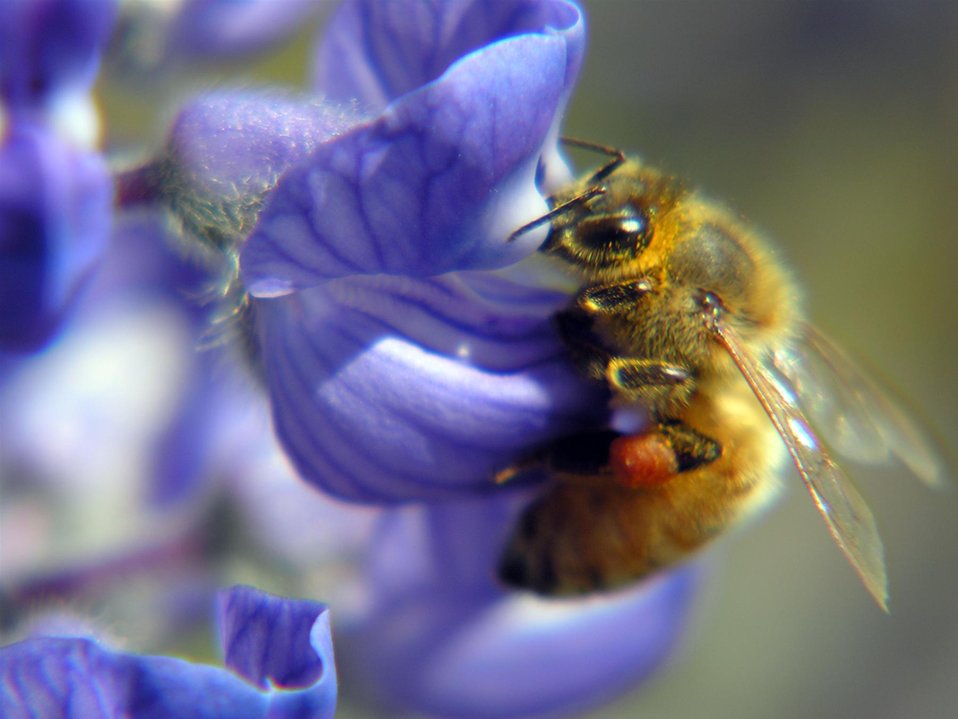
Several species of plants and insects thrive on the land of the Pacific Northwest.